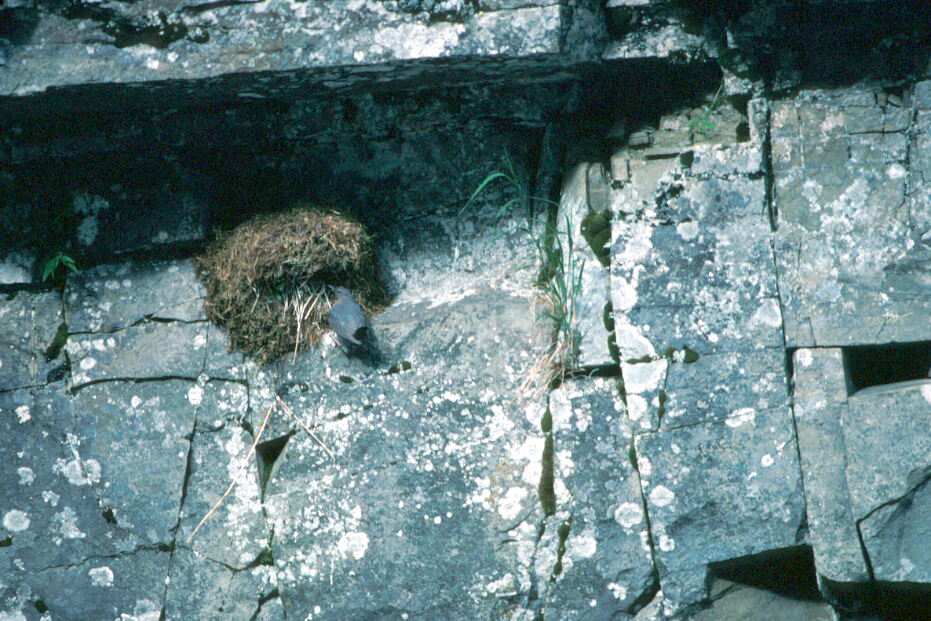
American Dipper.